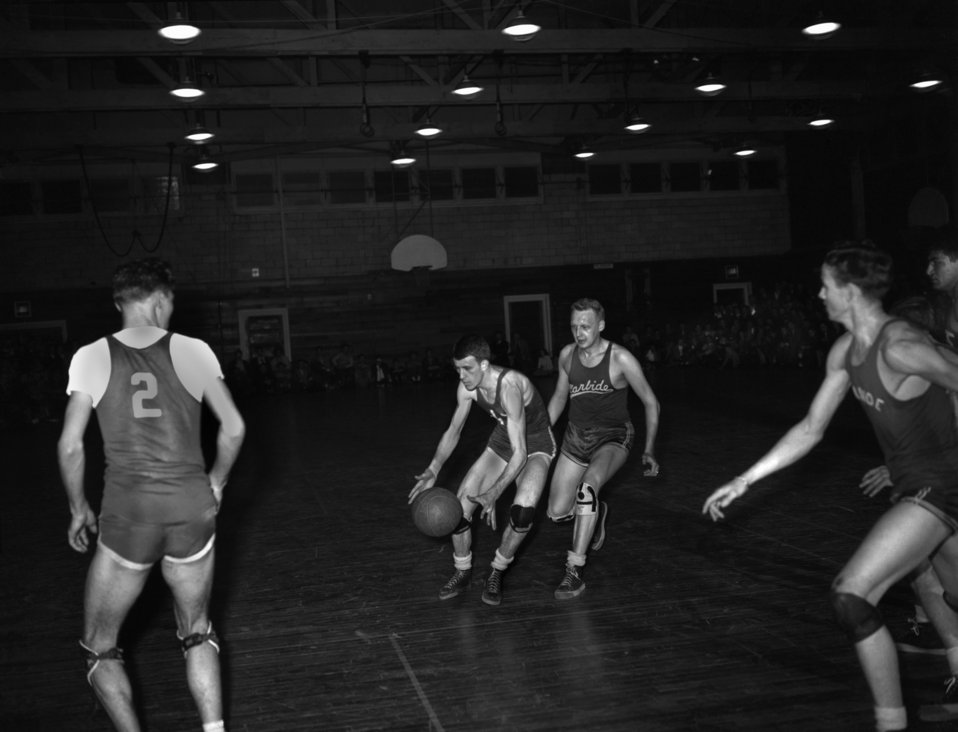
Mens Basketball Carbide vs AIT Oak Ridge

3354 DOE photo Ed Westcott 3-20-1947 Oak Ridge Tennessee